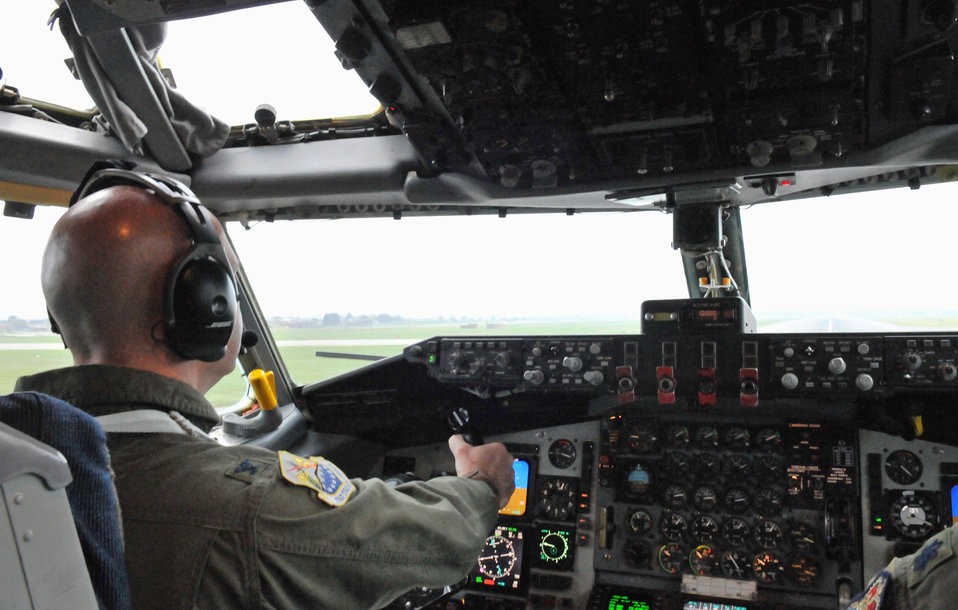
Iceland's volcanic ash affect Mildenhall exercise

RAF MILDENHALL, England ? Col. Chad Manske, 100th Air Refueling Wing commander, pulls back on the controls of the KC-135 Stratotanker as he lifts the aircraft airborne. The colonel piloted the plane during Exercise BRILLIANT ARDENT April 15.